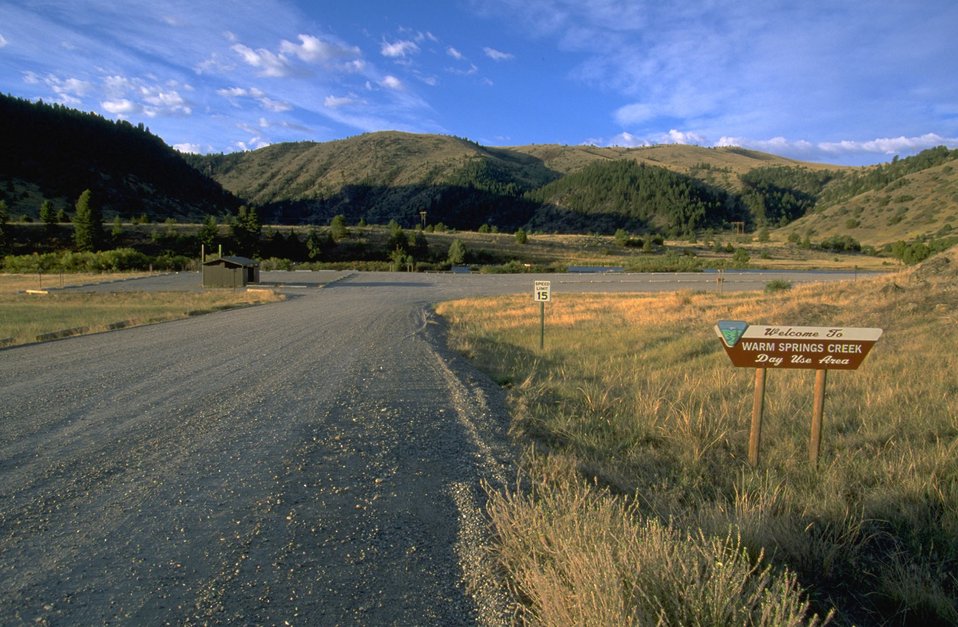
Entrance to the Warm Springs Day Use Area